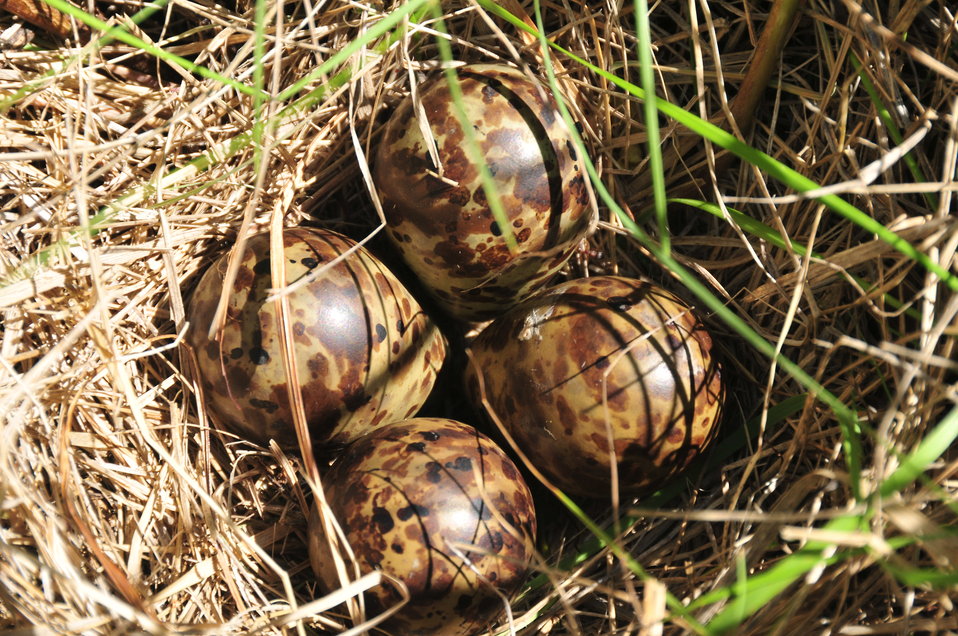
Wilson's Snipe Nest